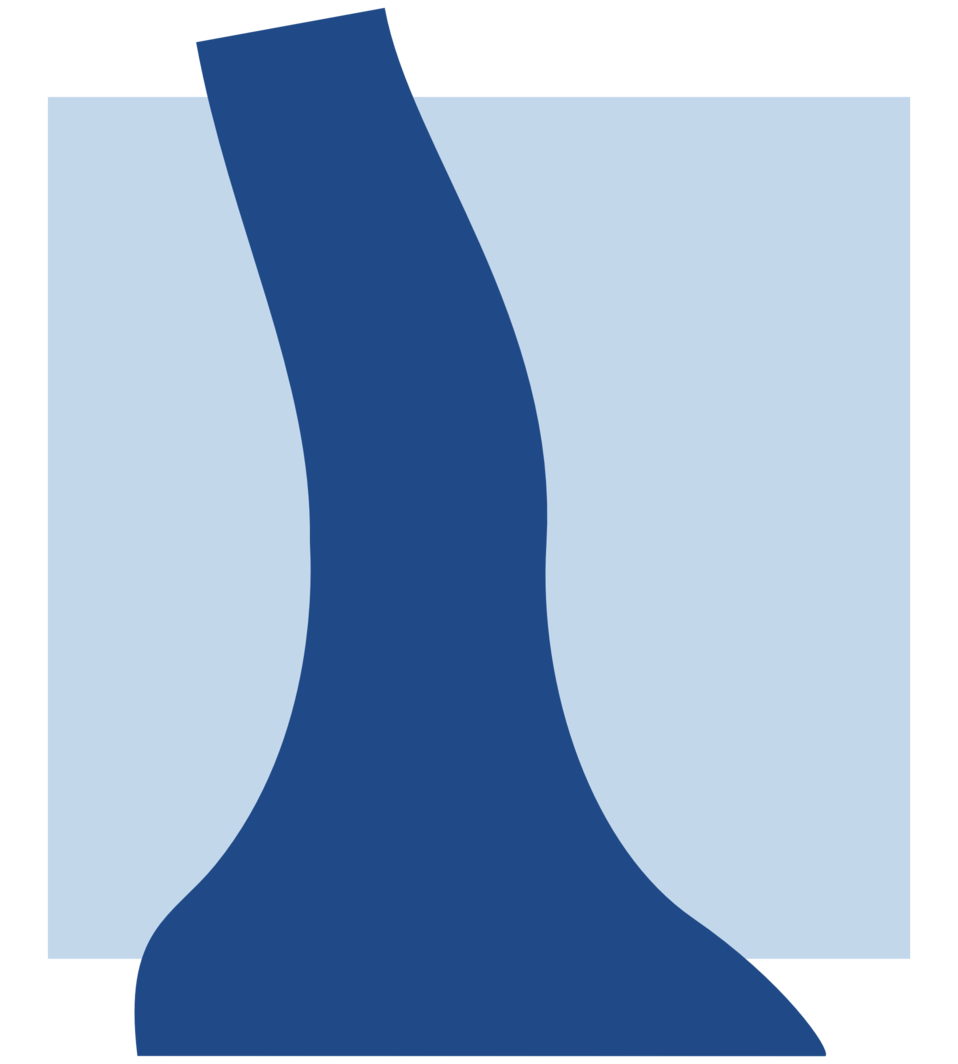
Icon for a river estuary